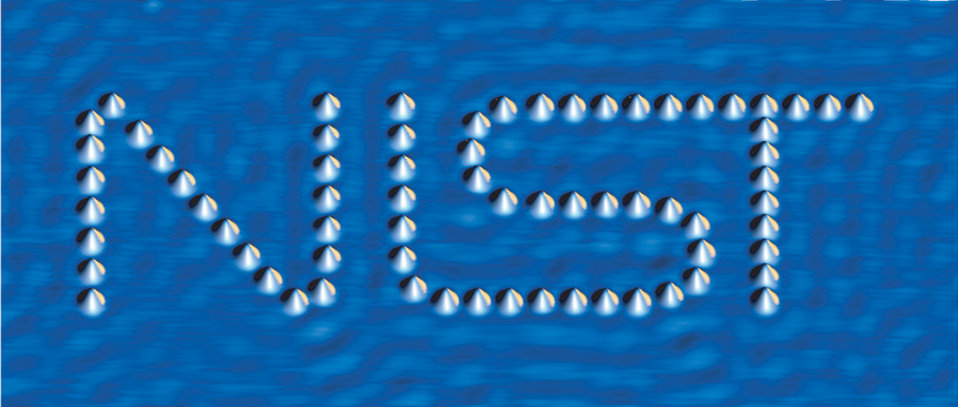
NIST Atom Logo

A 40-nanometer-wide NIST logo made with cobalt atoms on a copper surface. The ripples in the background are made by electrons, which create a fluid-like layer at the copper surface. Each atom on the surface acts like a pebble dropped in a pond.